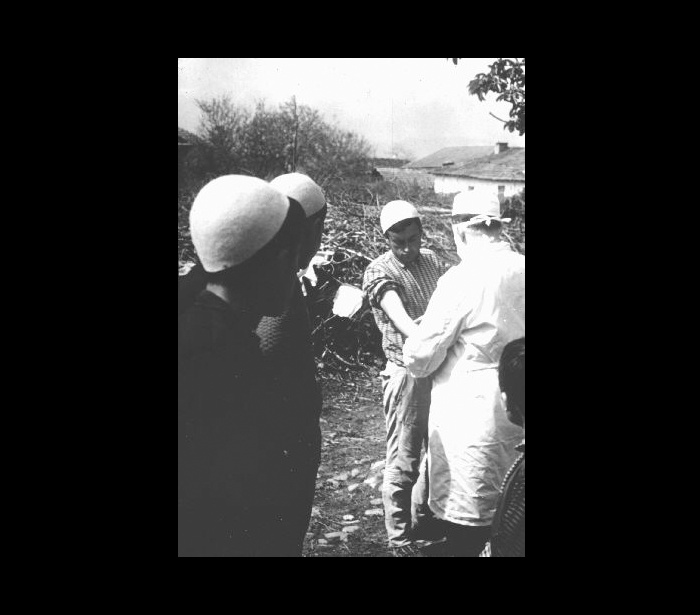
Physician checking immunization reaction.